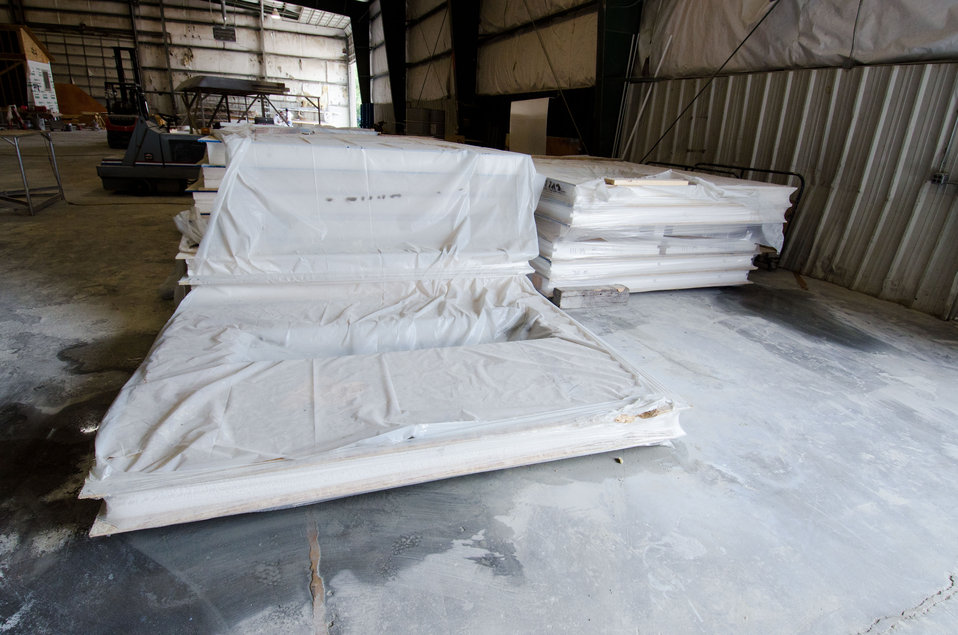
Extra thick foam filled floors and exterior walls add to the climate sealing and energy efficiency of a new type of manufactured home from Stardust Industries on Wednesday, July 13, 2011 in Monticello, KY. They are helping retool and redirect Kentucky’s houseboat manufacturing industry – which has been decimated because of the struggling economy – by using its facilities and manpower to create low-cost housing that is energy efficient. Rural Development obligated $499,000 in Rural Business Enterprise Grant funds to support this unique endeavor. Up until a few years ago, there were several successful houseboat manufacturers in the four-county area surrounding the city of Somerset. Most have now ceased operation or drastically reduced output, which has led to dramatic, long-term job loss. These new energy efficient homes will be constructed in redesigned, refitted houseboat factories using local workers that have been retrained.